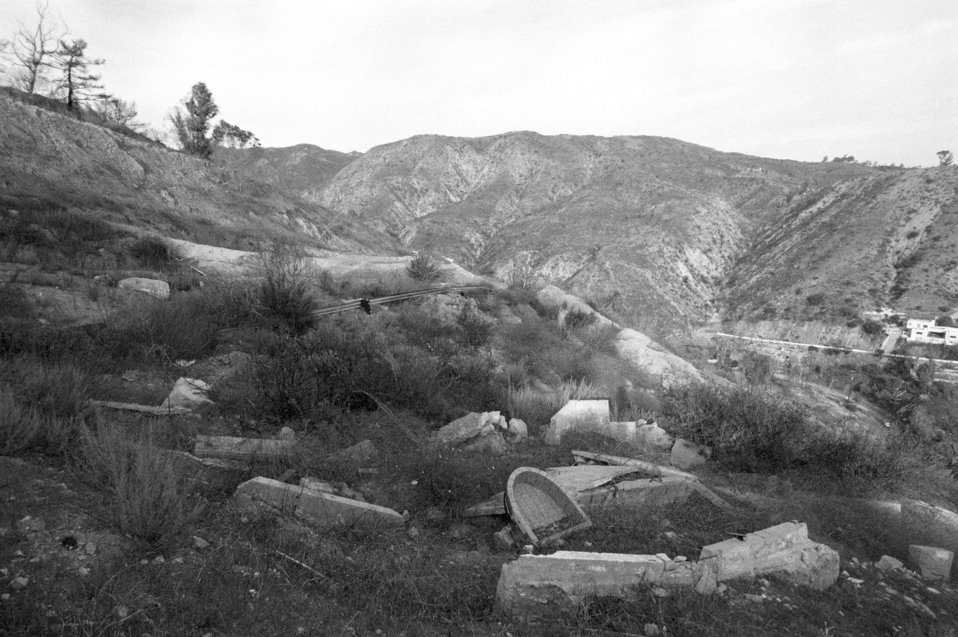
Torrential rains from El Nino created mudslides that destroyed homes along the Southern California coast on January 23, 1995.